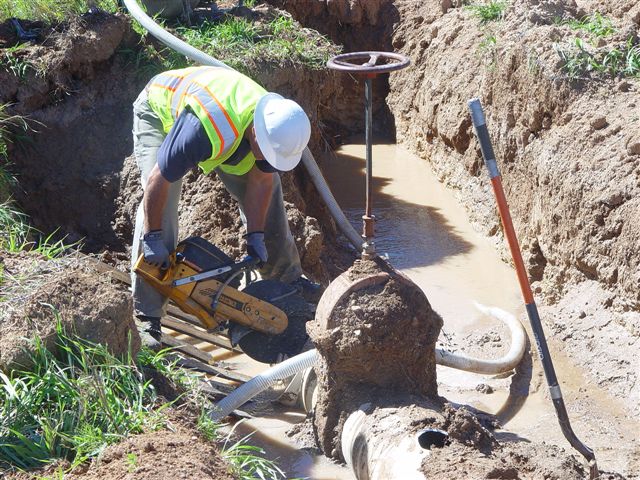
Las Vegas 5

Workers from Deerfield Corp. of Albuquerque, N.M. remove old water supply pipes and water monitoring system in an area where a new water delivery and pipeline system is being rehabilitated at Las Vegas NWR in Las Vegas, N.M. The work is part of a Recovery Act project for the refuge.